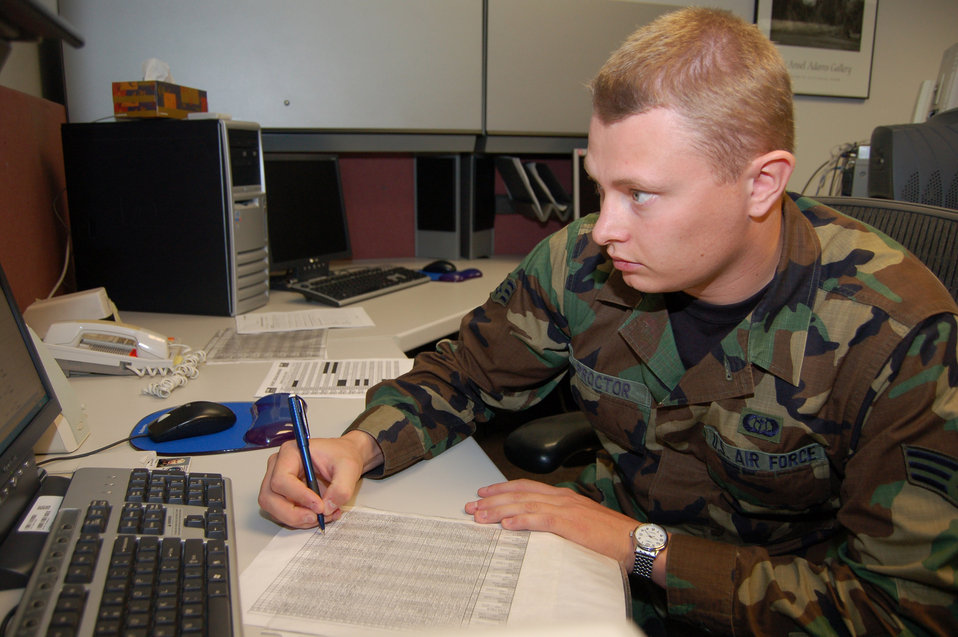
Weather agency helps commanders with mission decisions

Senior Airman Brandon Proctor compares previous forecasts against actual weather recordings to quality-check formulas used to make the forecasts. He is a weather broadcast technician with the Air Force Weather Agency at Offutt Air Force Base, Neb.